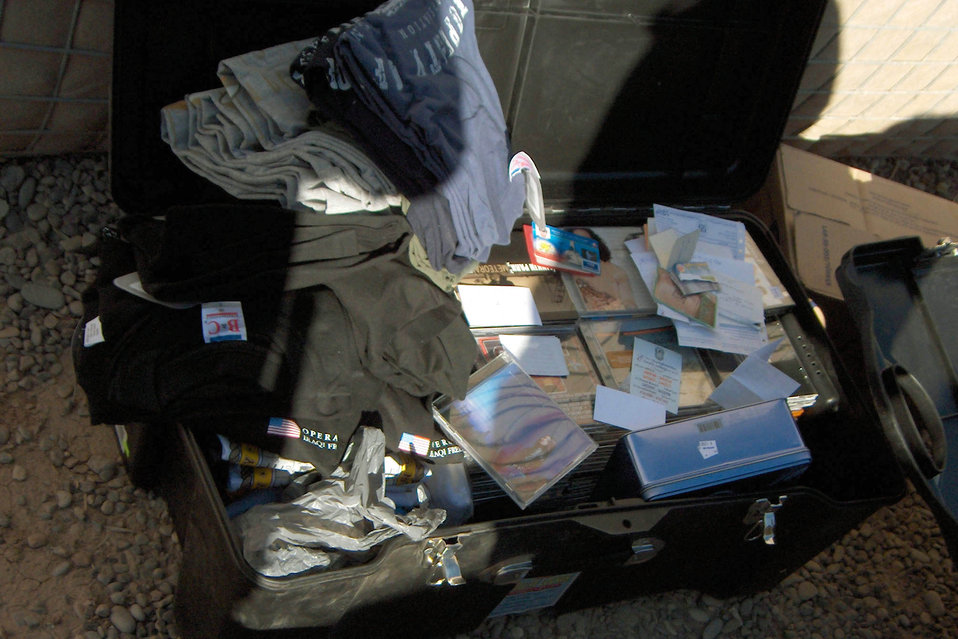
Surprise inspection nets weapons, alcohol, merchandise

KIRKUK AIR BASE, Iraq -- Clothing, CDs and other merchandise stolen from the Army and Air Force Exchange Service here were recovered during a surprise inspection of areas inhabited by third-country workers and American contractors. The operation successfully broke up an AAFES theft ring.